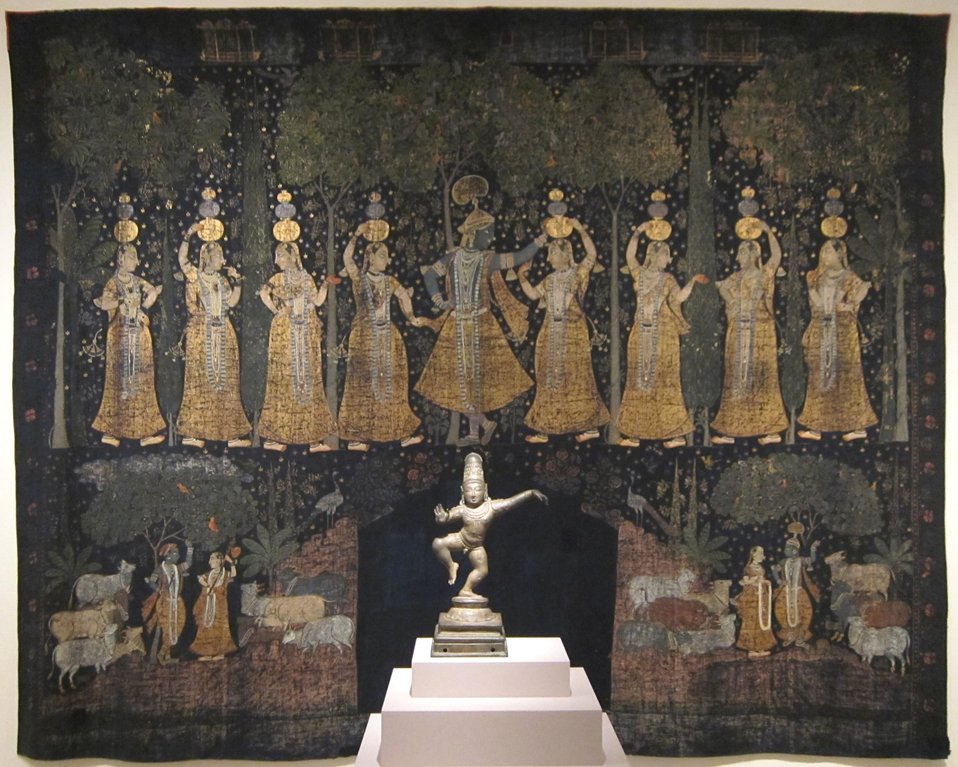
Playful Gifts and other Gopi Scenes, pichwai from Golconda, India, late 17th century, dyed cotton with polychrome and gold, Honolulu Museum of Art, accession 10,754.1